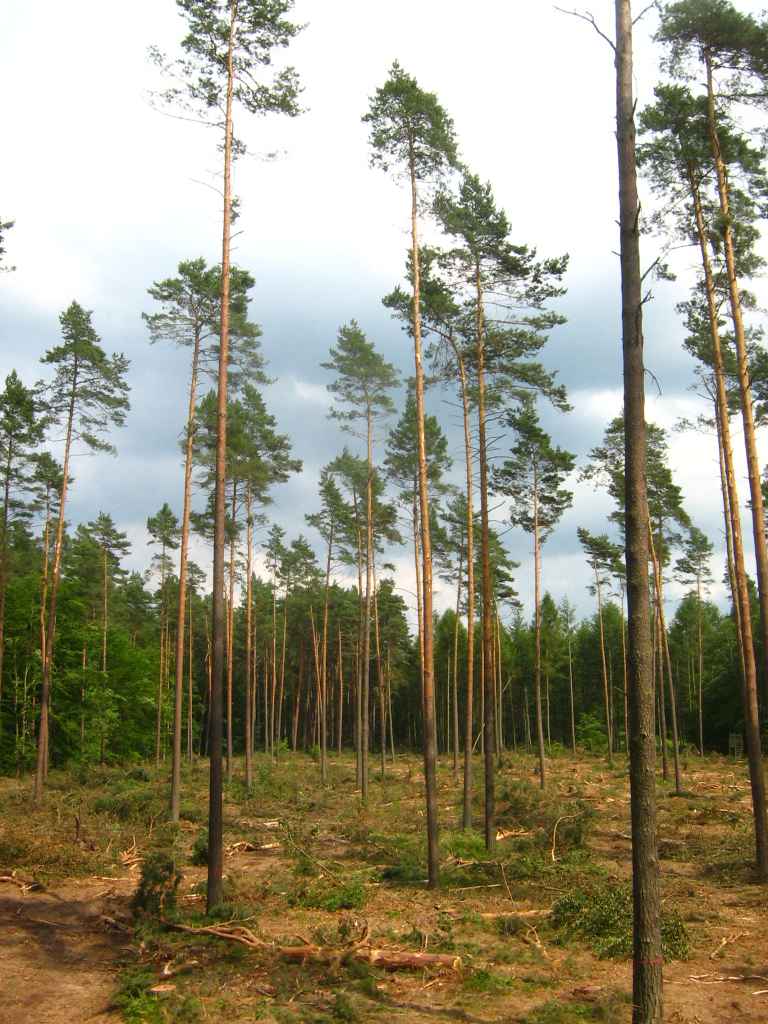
Deutsch: Kiefernwald in der Ueckermünder Heide bei Rothemühl.